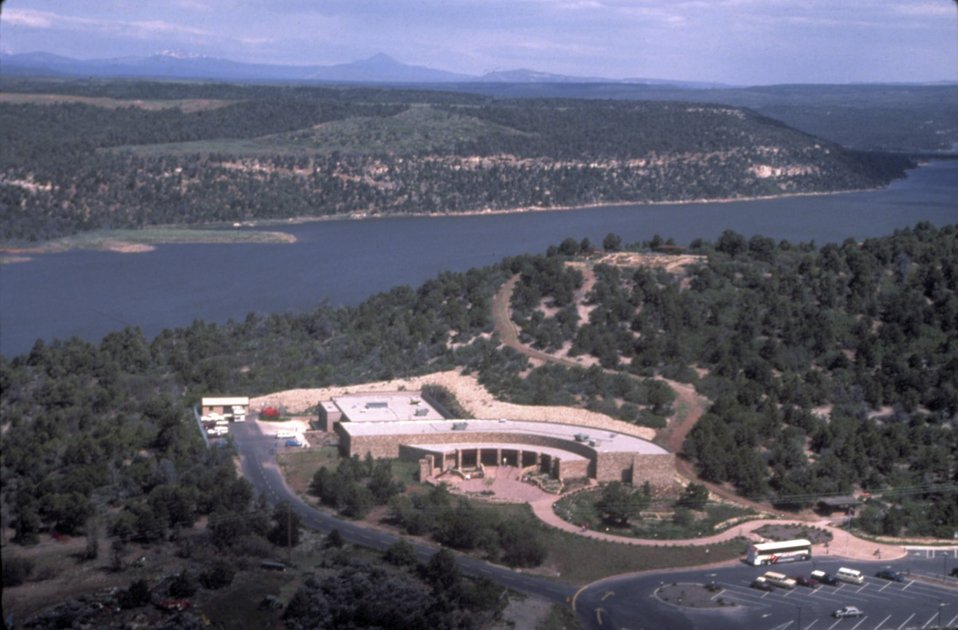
Aerial photo of the Anasazi Heritage Center in Dolores, Colorado.